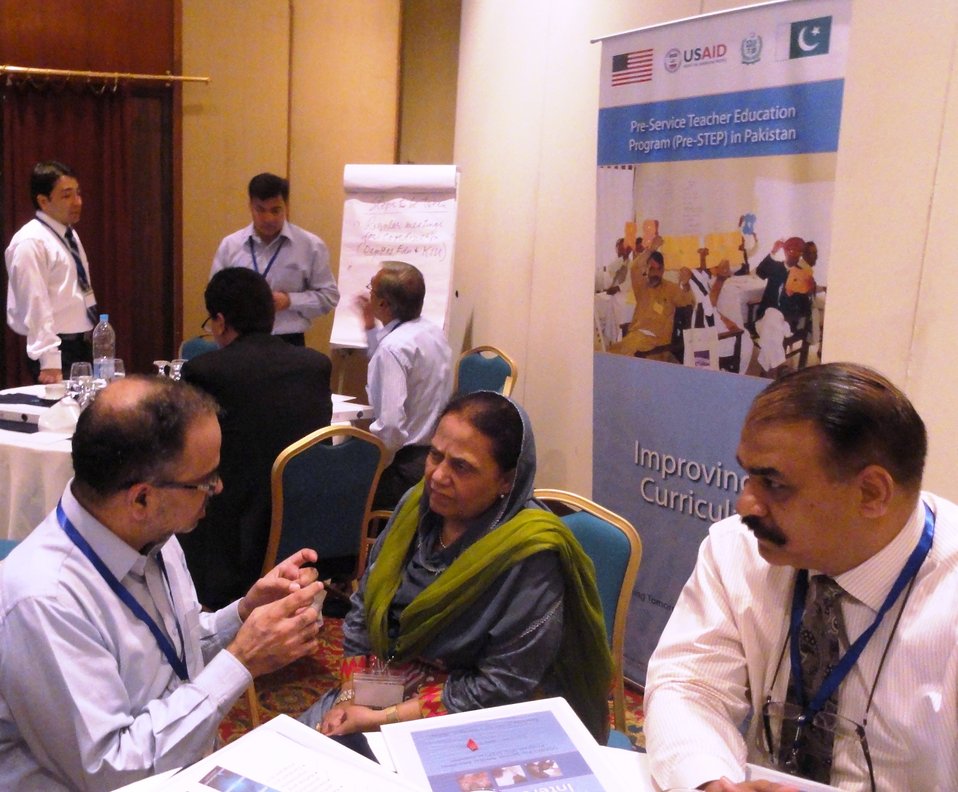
Group discussions at Pre-STEP's Consultative Interchange

Karachi, July 6, 2011 – Group discussions at Pre-STEP's Consultative Interchange .The two-day workshop was organized by the USAID-funded Pre-Service Teacher Education Program (PreSTEP). PreSTEP assists the Government of Pakistan to design and carry out reforms related to new teacher training, as mandated by Pakistan’s National Education Policy agenda.